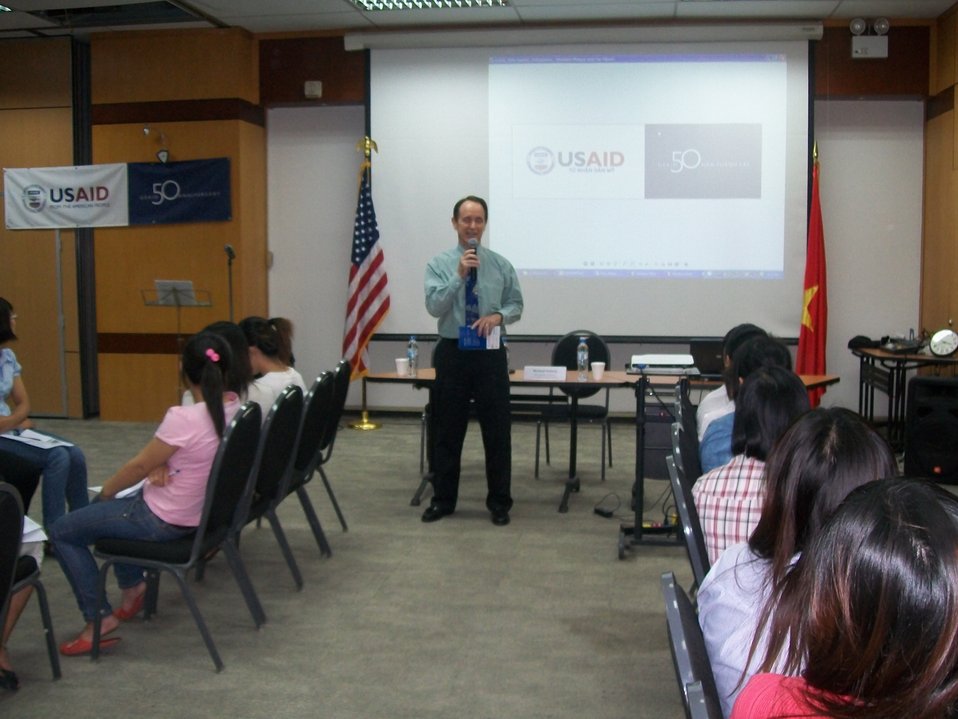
American Center and USAID host Debate Club on Higher Education

USAID/Vietnam Mission Director Francis Donovan address students and discusses the USAID-supported Higher Engineering Education Alliance Program with Arizona State University, Intel, and others.